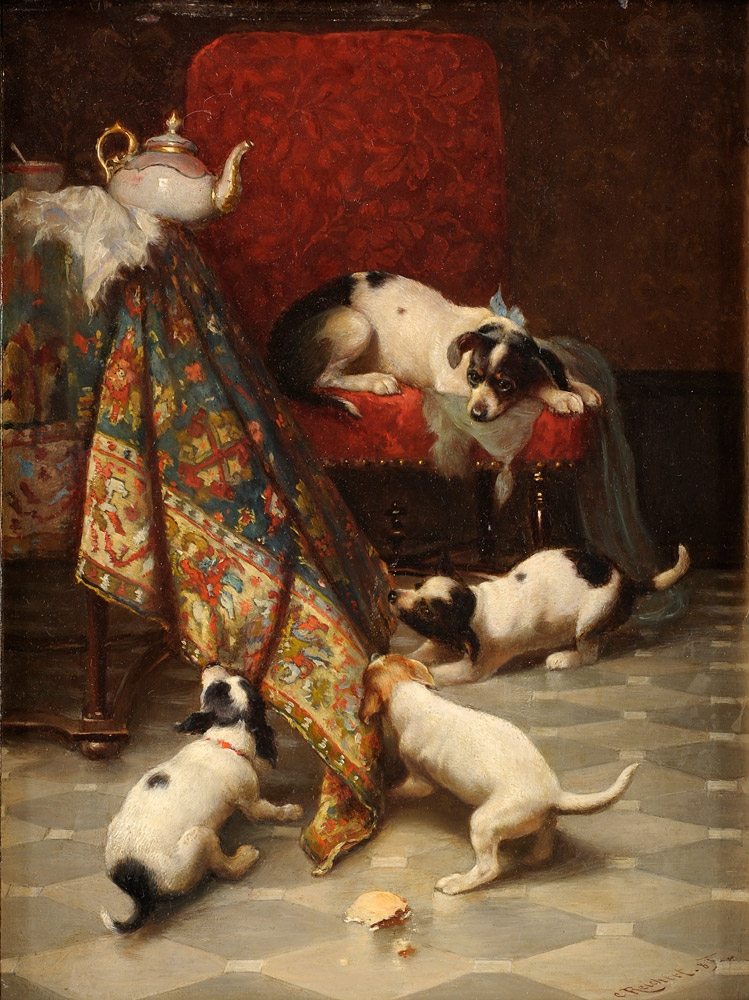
Mutters ganzer Stolz. Signiert. Datiert (18) 83. Öl/Holz, 26 x 20 cm